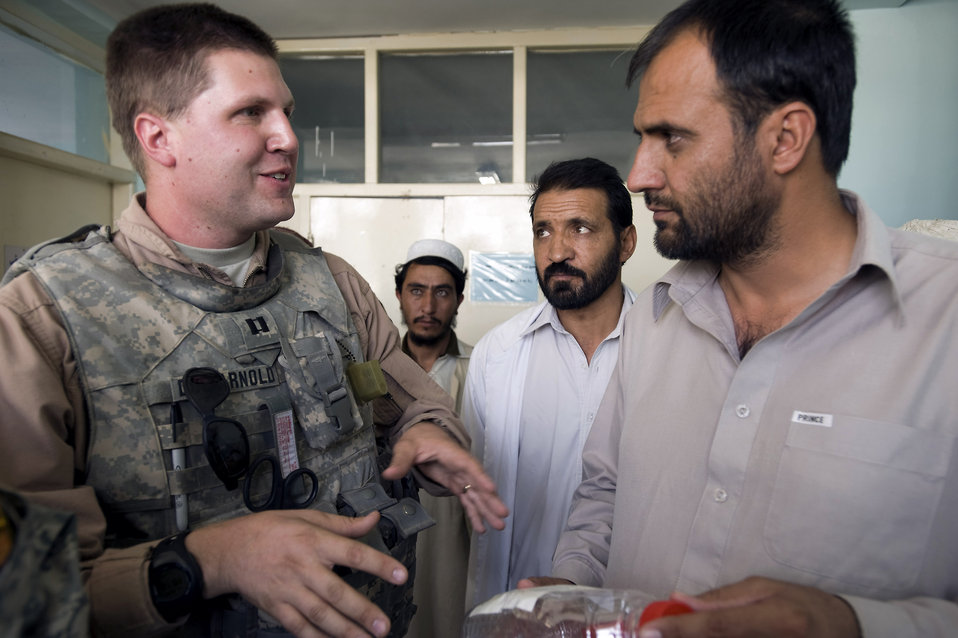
Zabul team combats malnutrition, unsafe water

Capt. (Dr.) James J. Arnold shows Dr. Saleh Mohammed, Director of the Shajoy District Hospital in Shajoy, Afghanistan, how to mix chlorine and water to kill bacteria and parasites. Dr. Arnold is a family medicine doctor and is deployed to the Zabul Provincial Reconstruction Team. In an effort to combat one of the main causes of high infant mortality rate here, Dr. Arnold and other members of the Zabul PRT developed a system for extracting chlorine from salt to sanitize drinking water.